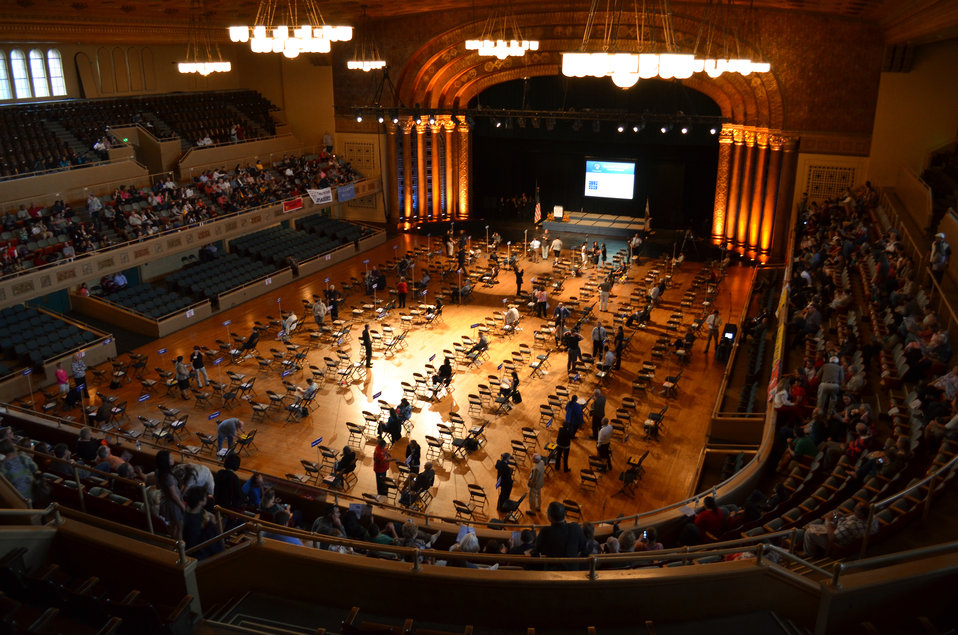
California Academic Decathlon about to begin

A view of the 2014 California Academic Decathlon in Sacramento, Calif., March 22, 2014, held at the Memorial Auditorium. Six U.S. Army Corps of Engineers Sacramento District employees volunteered their time during the three-day event, which determines who represents California during the national decathlon this April in Honolulu.